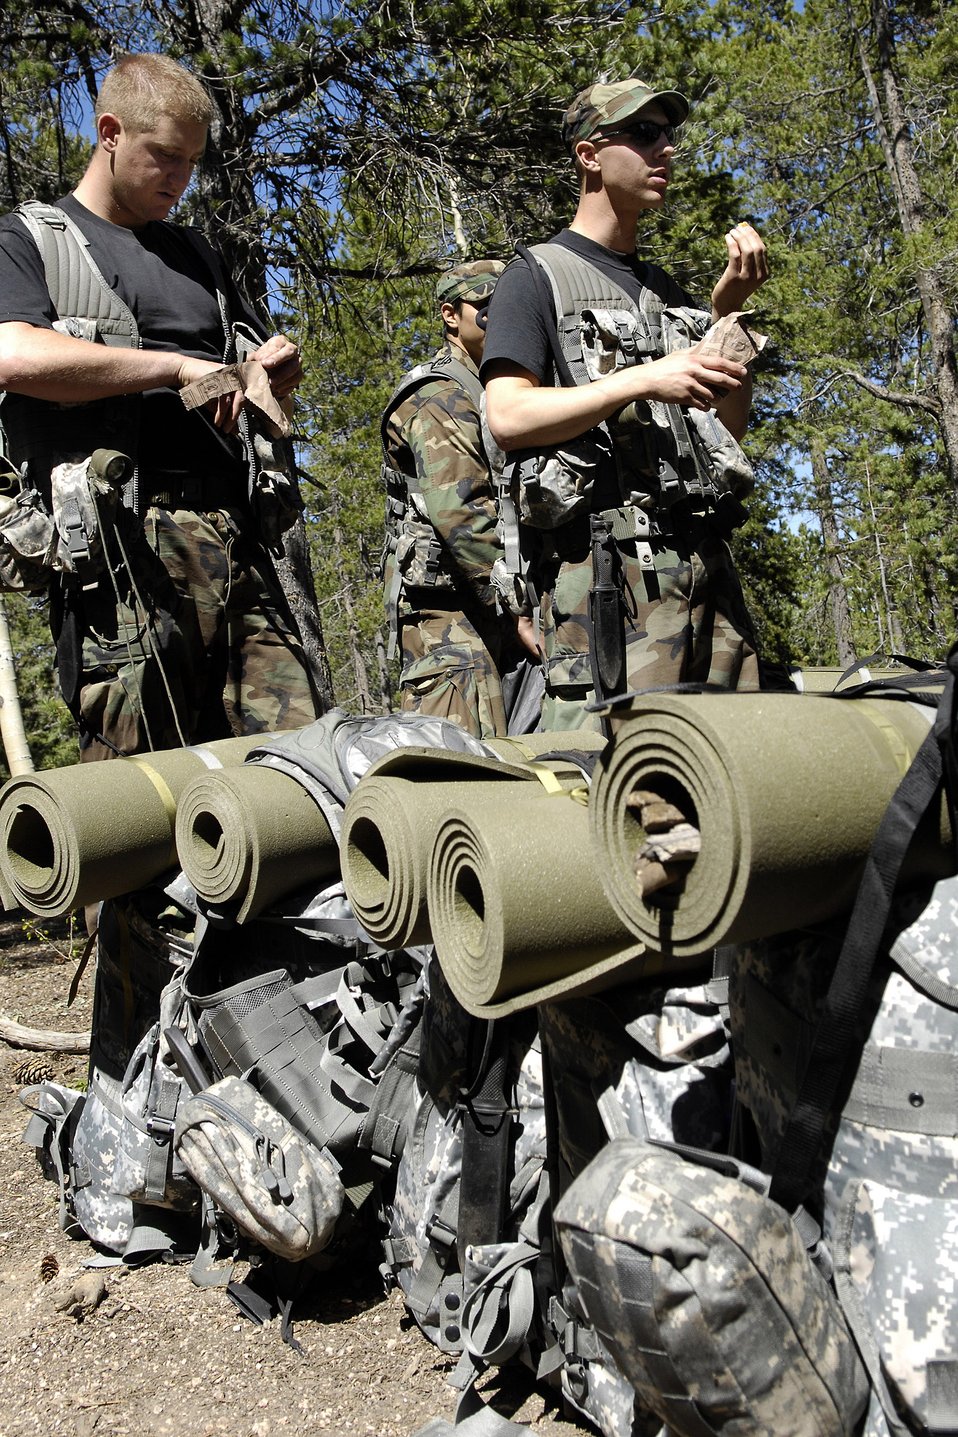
Cadets train in survival, evasion, resistance, escape

Air Force Academy Cadets 2nd Class Cory Tintzman and Evan Robinson take a break during Combat Survival Training June 9 in Saylor Park in Colo. More than 600 cadets are being trained as instructors in survival, evasion, resistance and escape tactics during the 2008 summer period.